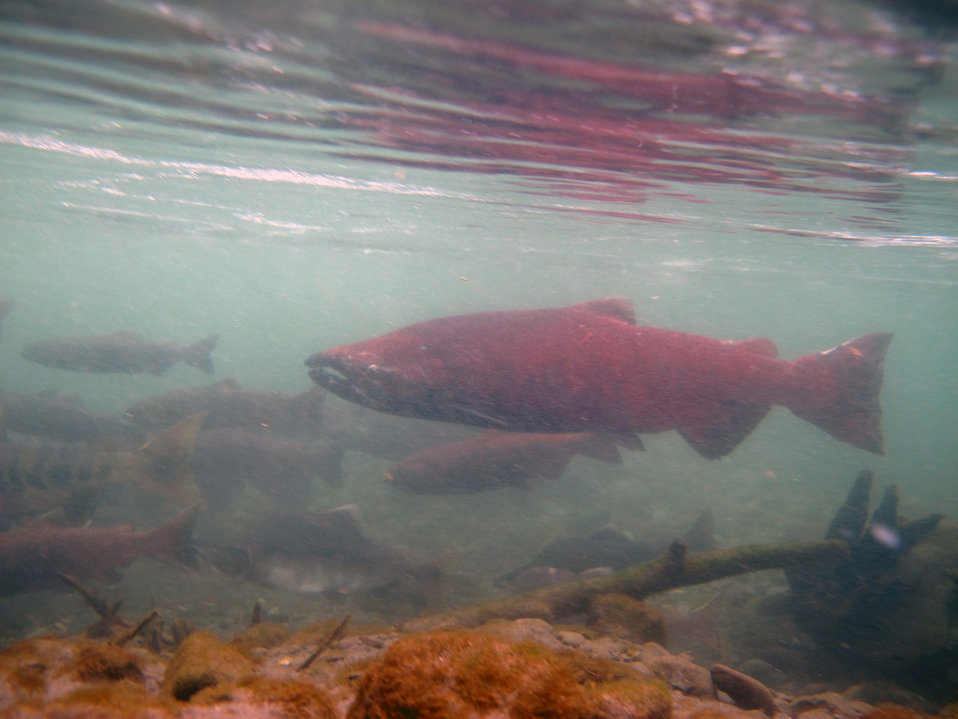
King salmon in Ship Creek

A king salmon migrates up Ship Creek in the company of pink, chum and silver salmon. USFWS/Katrina Mueller